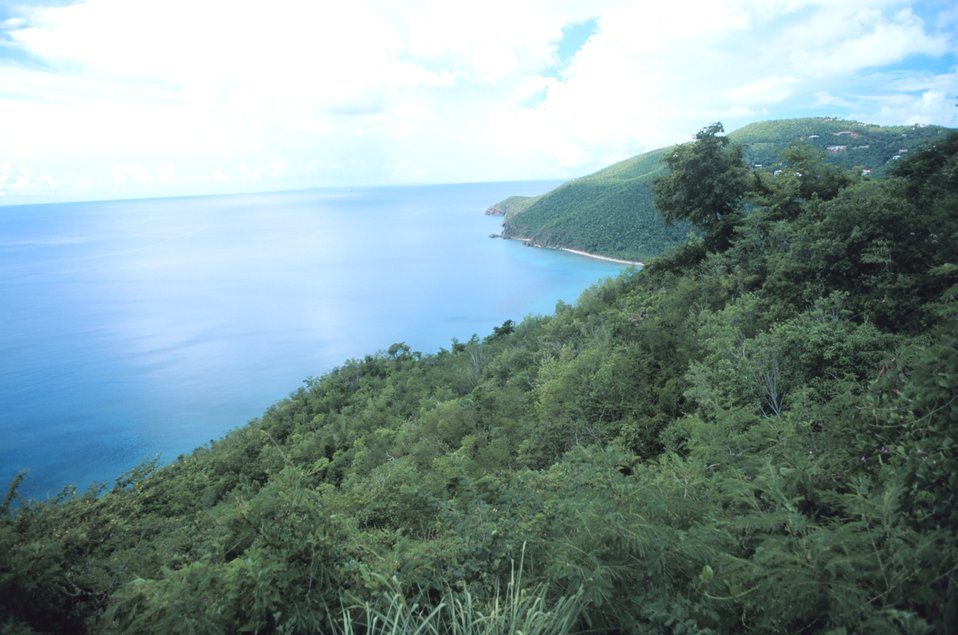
Westend Road overlook of Fortuna Bay